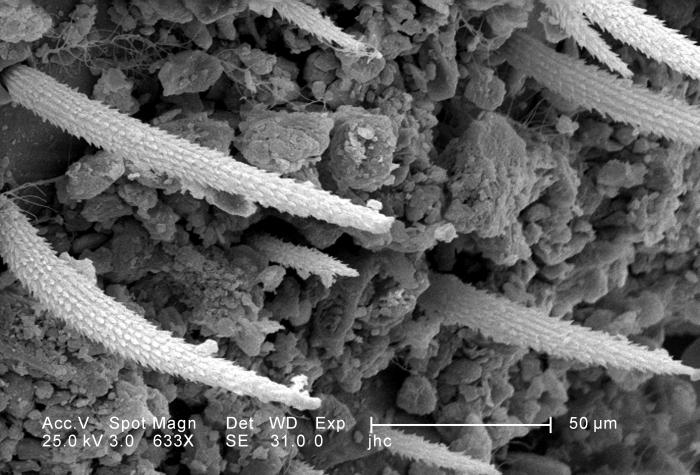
Under a moderately-high magnification of 633X, approximately four times that of PHIL 11807, this scanning electron micrograph (SEM) revealed the ultrastructural features found on the ventral exoskeletal surface of this larval-staged antlion's mandibles. This larva is sometimes referred to as a 'doodlebug', because of the trails it leaves in the soft sand as it hunts for prey. This arthropod, i.e., jointed legs, undergoes dramatic morphologic changes when it metamorphoses into a beautiful flying antlion lacewing.